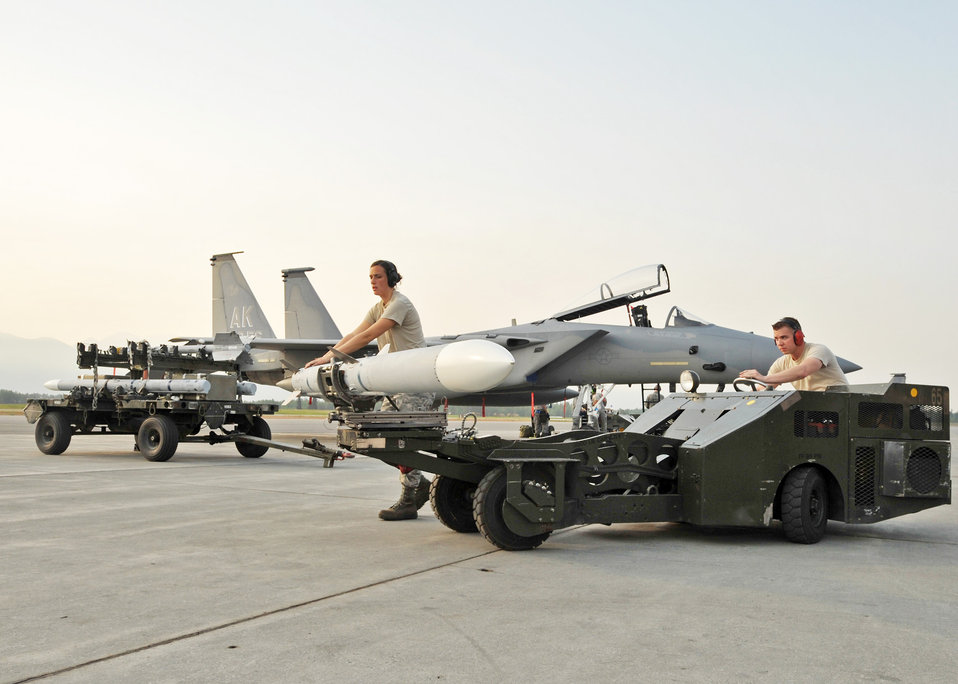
Alaskan load crews compete

Staff Sgt. Katherine Jordan (left), 90th Aircraft Maintenance Unit, and Airman 1st Class Daniel Kok, 3 Aircraft Maintenance Squadron, prepare to load a missile on an F-22 Raptor during a load crew competition July 10 at Elmendorf Air Force Base, Alaska.